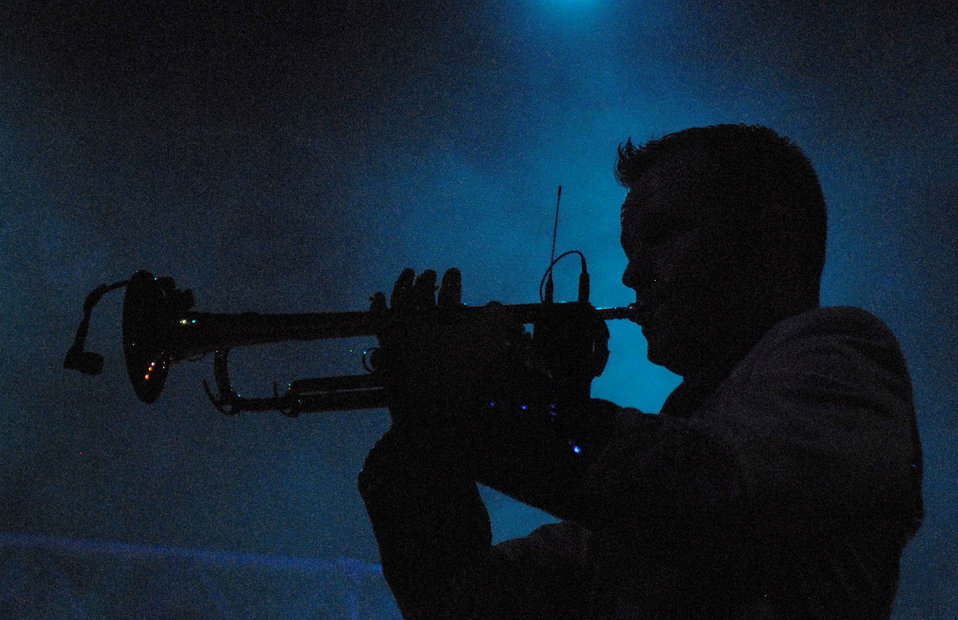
Another shade of Blue

Senior Airman James Santos, a Tops in Blue 2011 trumpeter, plays June 1, 2011, at the San Angelo Coliseum in San Angelo, Texas.